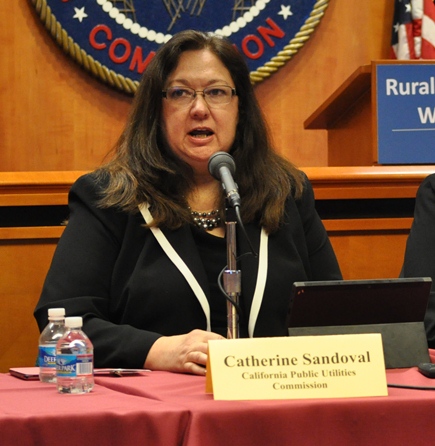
Rural Broadband Workshop: March 19, 2014

Panel 3: State Strategies to Meet the Rural Broadband Challenge